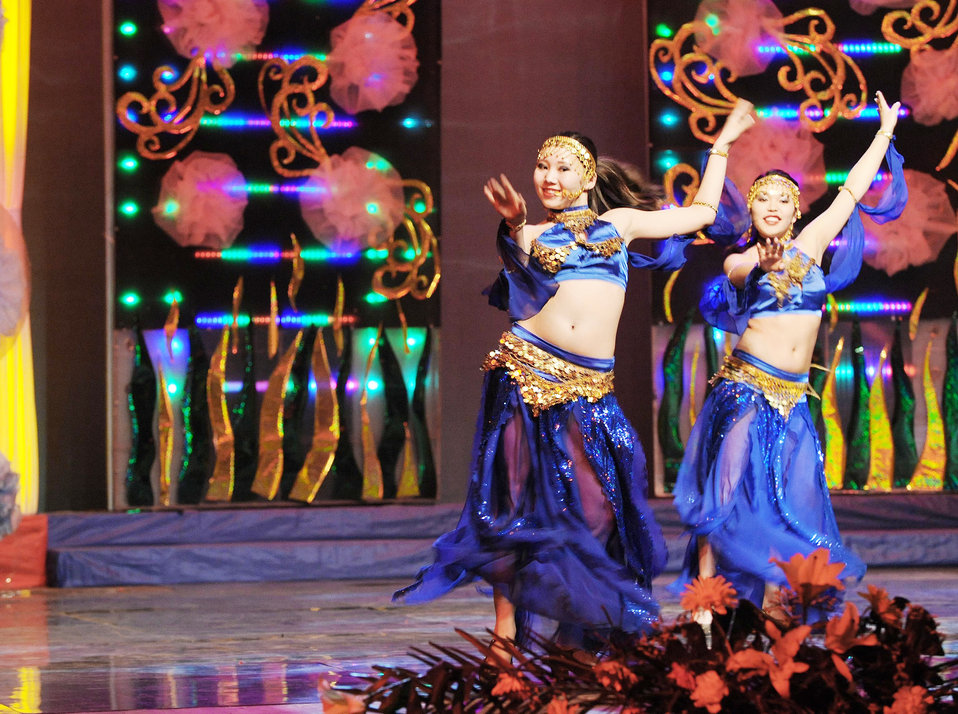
Airmen participate in Kyrgyz Philharmonic

Local performers belly dance during the centennial anniversary of International Women's Day concert at the Kyrgyz National Philharmonic Feb. 25, 2010, in Bishkek, Kyrgyzstan. In honor of the centennial anniversary of International Women's Day, the Congress of Women of the Kyrgyz Republic hosted 25 Airmen from the Transit at Manas who took part in the three-hour performance.